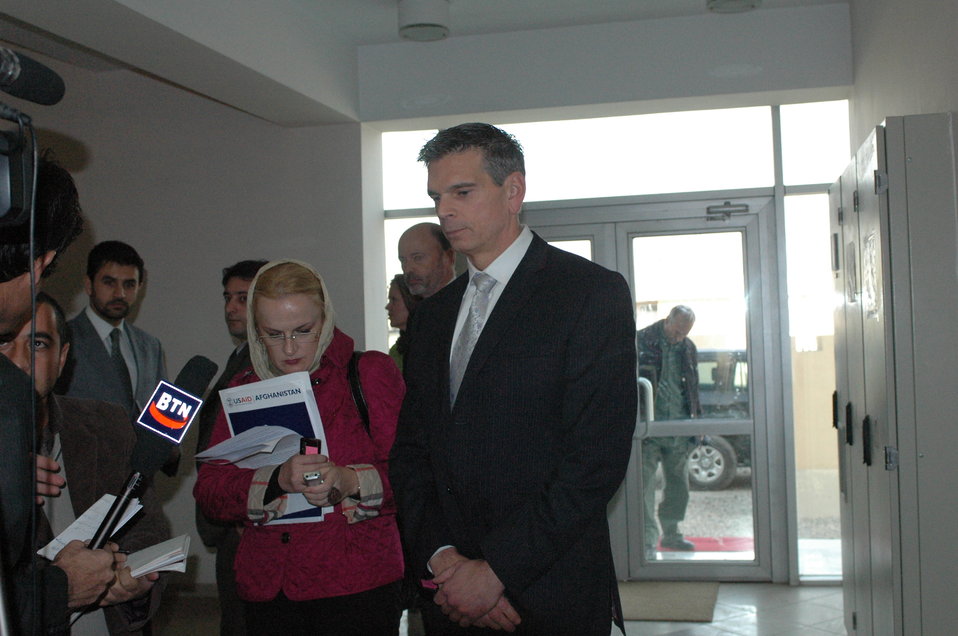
Community Based Stabilization Grants Ceremony, December 7, 2010